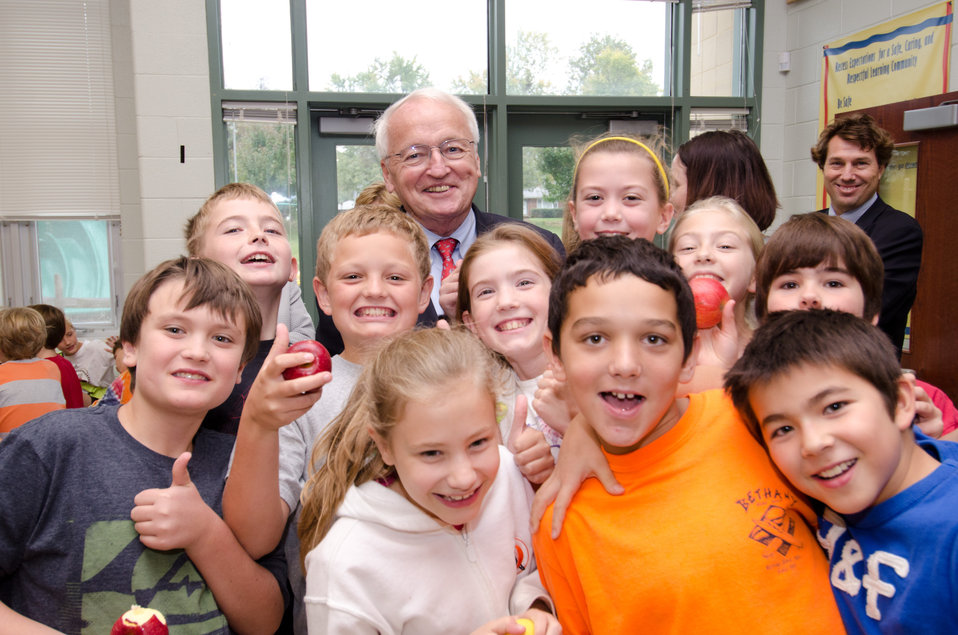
These are some of the many students that stopped at the farmers' tables and talk with Under Secretary for Food, Nutrition and Consumer Services Kevin Concannon (backrow c.) during his visit to Nottingham Elementary School in Arlington, VA, on Wednesday, October 12, 2011. The apples, they are eating, are from Big Riggs farm, Romney, WV, and were very popular with the students.